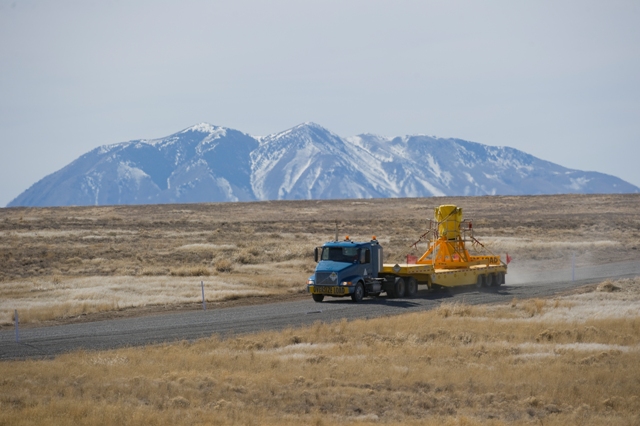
Idaho Site Achieves Successful First Nuclear Shipment on New Haul Road

The HFEF-6 cask is transported on the haul road.

The new road located between the Critical Infrastructure Test Range Complex (CITRC) and the Materials and Fuels Complex (MFC) is expected to help save significant time and cost over the life of the project by avoiding traffic disruptions on the public highway and increased cost associated with Department of Transportation regulatory requirements.